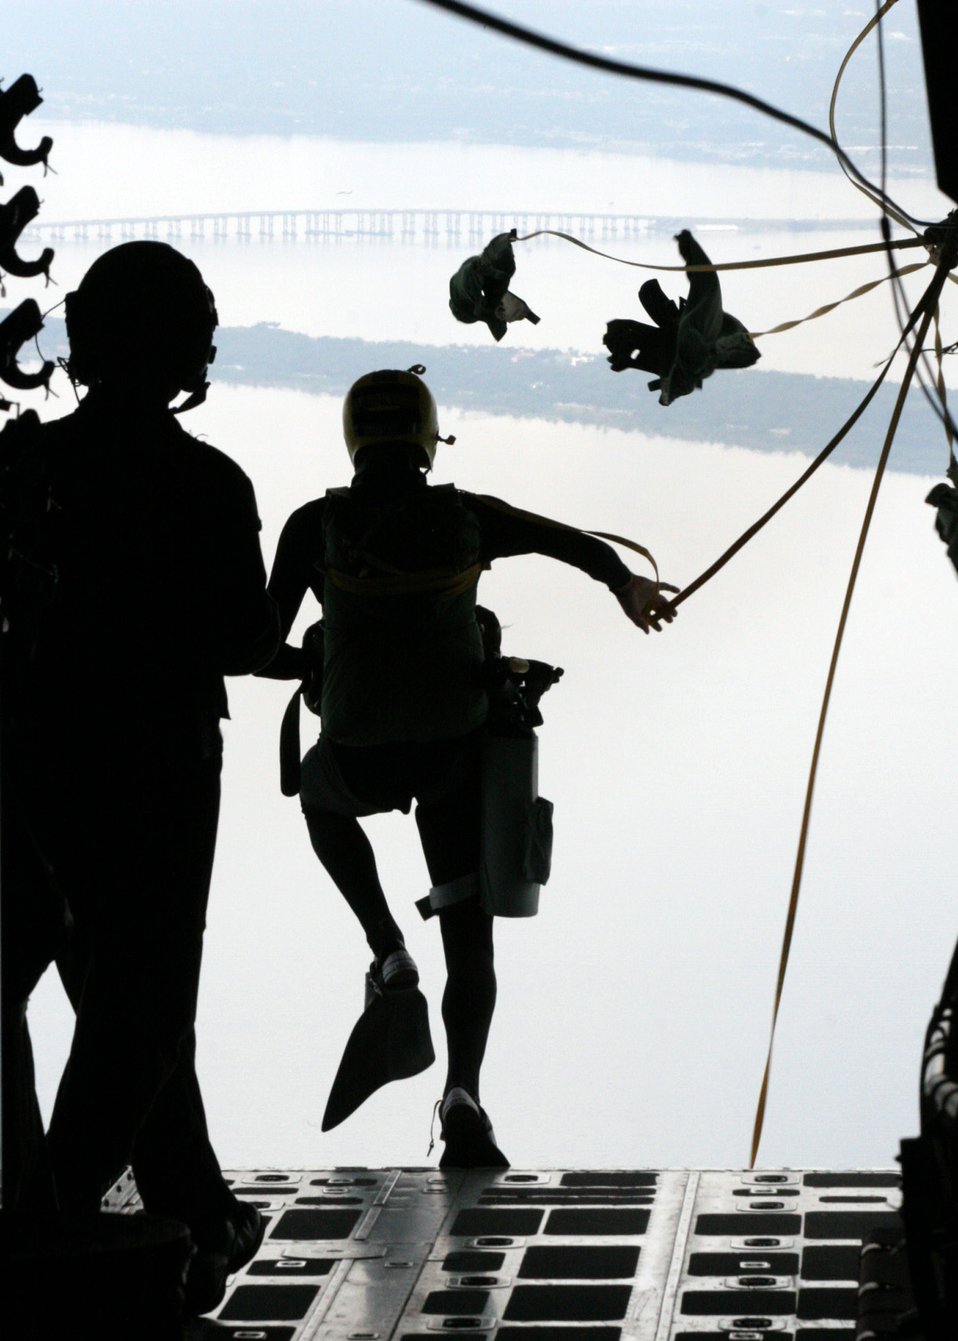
Into the Great Wideopen

Pararescue trainees from the 342nd Training Squadron jump off of a 920th Rescue wing HC-130 into the Banana River off the coast of Patrick AFB, Fla. Trainees come to Patrick as part of their six-week air operations training.